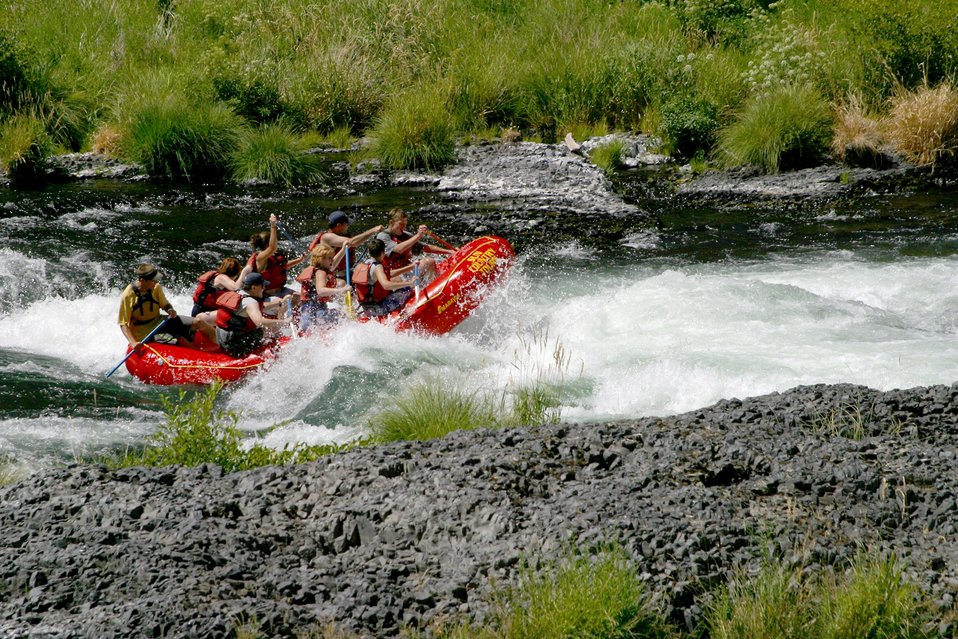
Oak Springs is a Class IV Rapids. The left channel has shallow rocks, large standing waves, turbulent currents and a large hole during high flows. The right channel has a large hole, shallow rocks, and turbulent currents. 7/26/03 Pelton Dam 3600 cfs: Moody Rapids 4300 cfs.